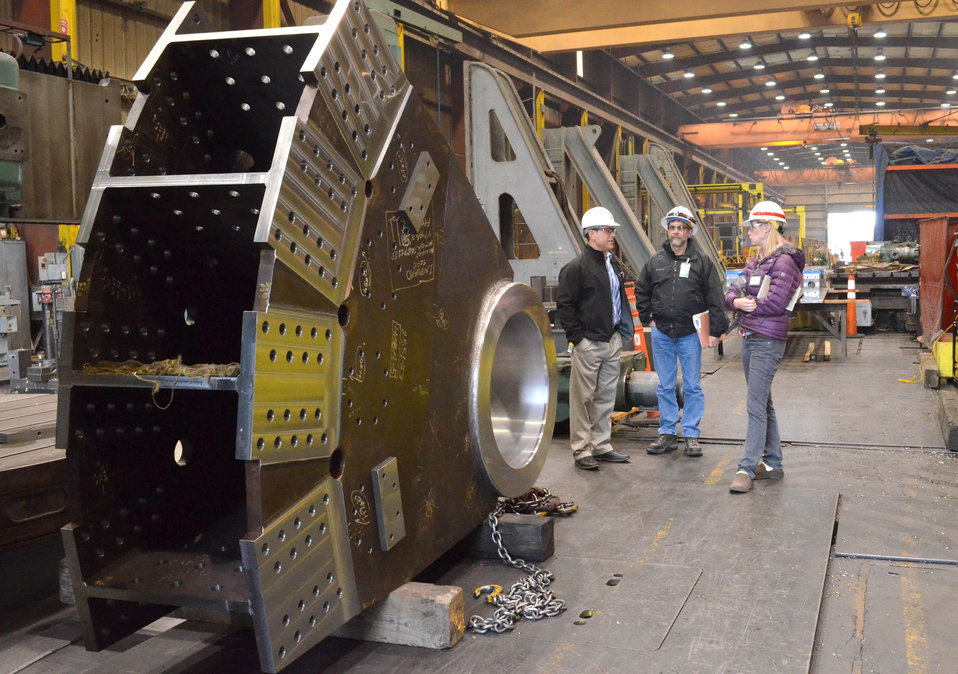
Giant Folsom spillway gates nearly ready for 600-mile journey to dam

Jackie Steiner, lead quality assurance inspector for the U.S. Army Corps of Engineers Sacramento District, discusses the fabrication of a Tainter gate trunnion assembly during a visit Jan. 31, 2014, to the Oregon Iron Works facility in Clackamas, Ore. Once complete, the gates will be trucked more than 600 miles to Folsom Dam, where they will be installed on a new auxiliary spillway in 2014. Photo cropped for emphasis.